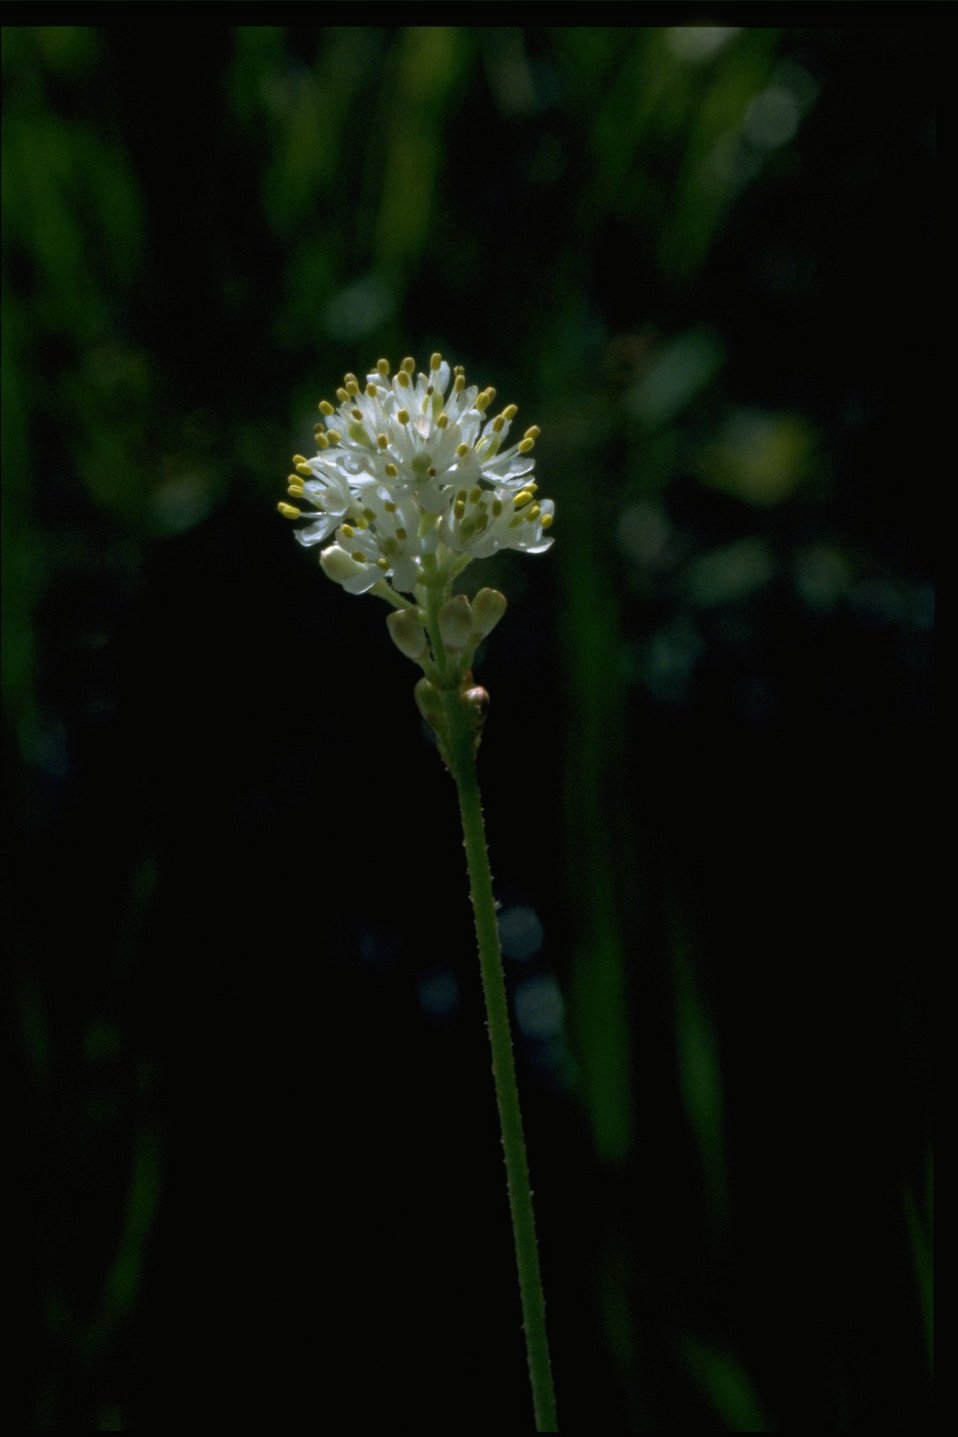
Closeup shot of Tofieldia occidentalis.